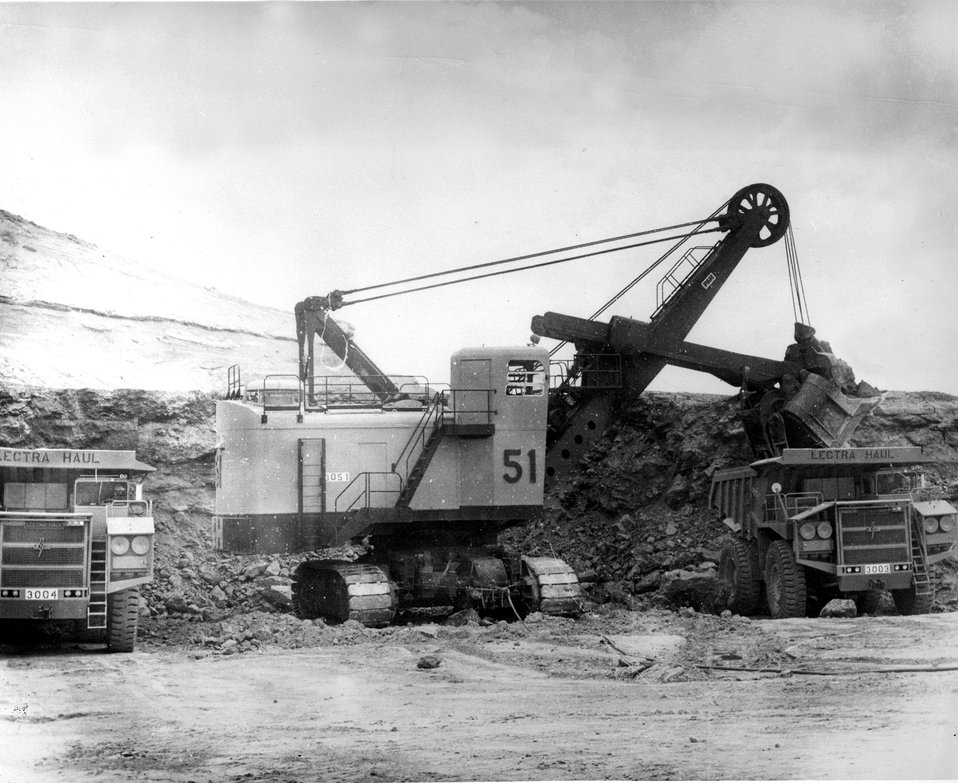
Removing overburden in 16 cubic yard bites and loading into 100 ton trucks from both sides at Exxon's Highland Uranium mine in Wyoming. c. 1976